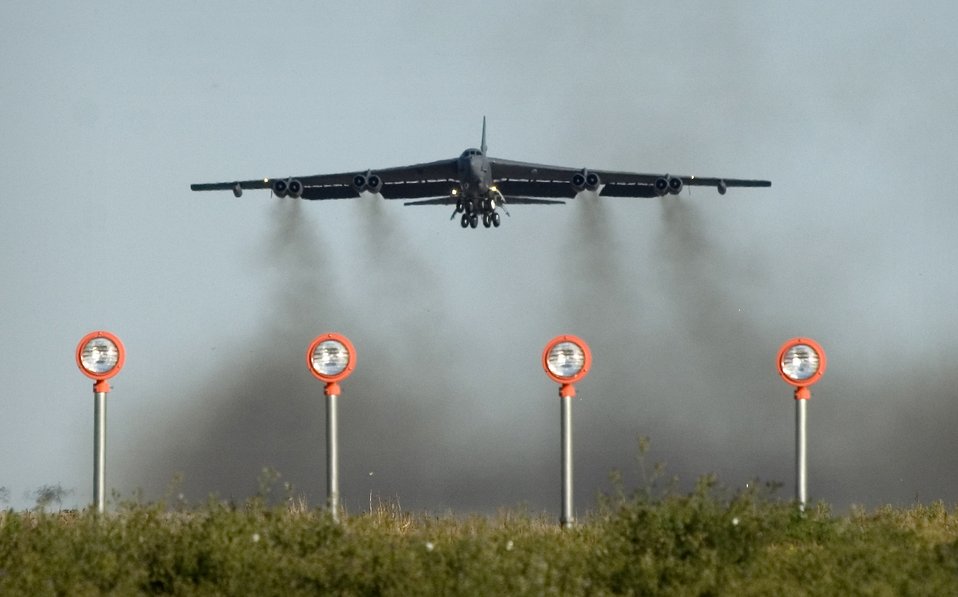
B-52 operations

A B-52 Stratofortress takes off from Minot Air Force Base, N.D., Aug. 21. The bomber from the 5th Bomb Wing conducted a training mission in the skies over North Dakota.